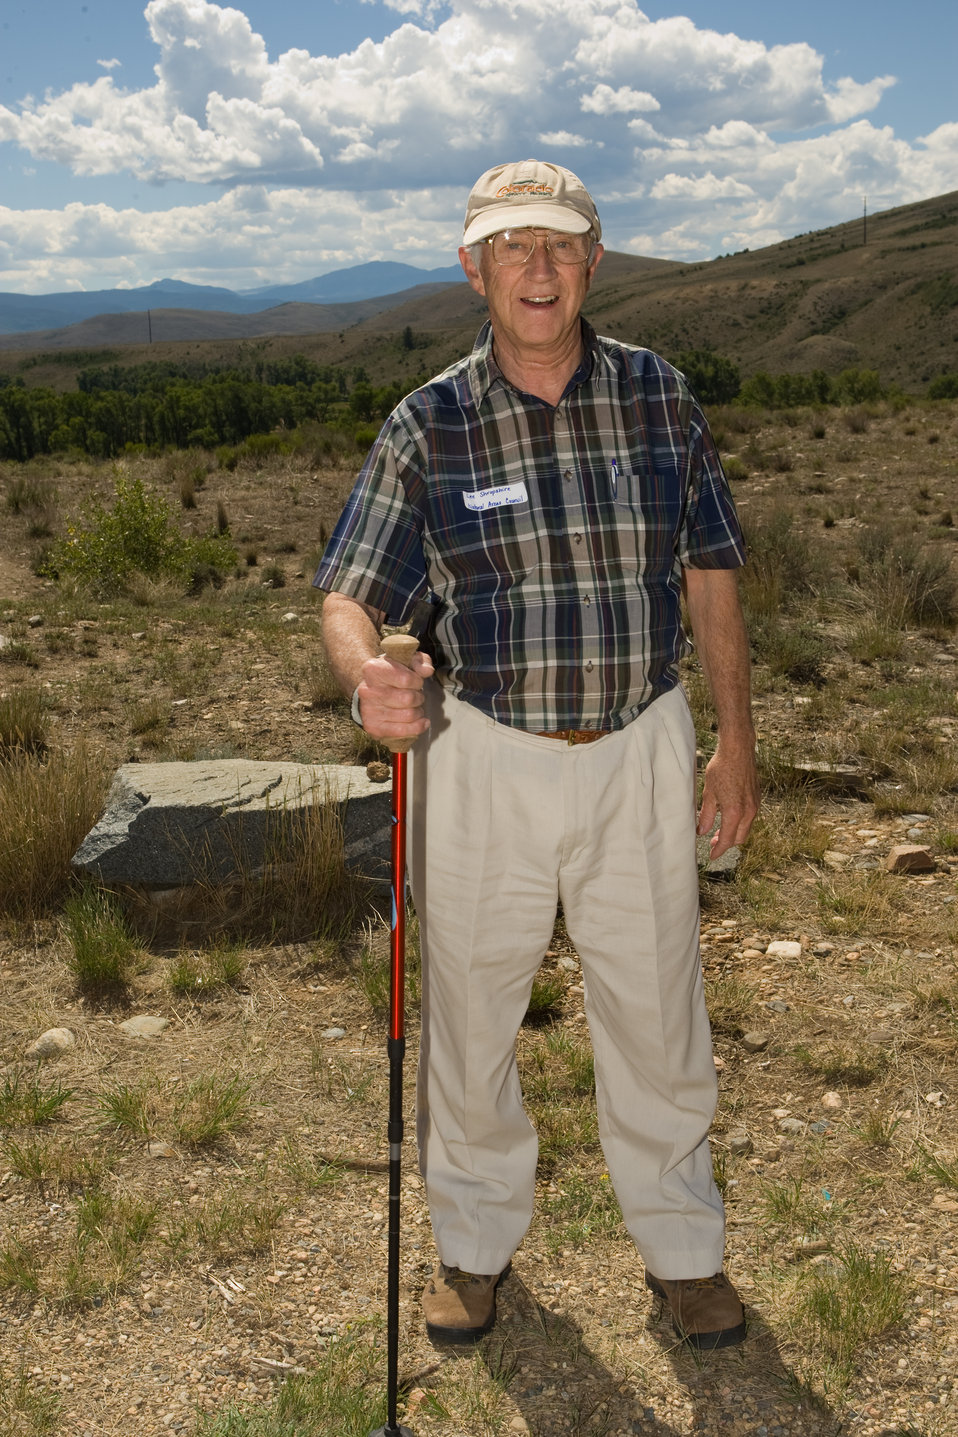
Colorado Rare Plant Conservation Initiative

The Colorado Rare Plant Conservation Initiative (RPCI) is a partnership of 23 statewide and regional agencies, private organizations, and academic institutions working to conserve 121 rare plants in Colorado. As part of these efforts the group developed the Colorado Rare Plant Conservation Strategy, developed Best Management Practices to reduce energy development impacts, addressed climate change, and developed focused strategies for the conservation of individual species at eight priority landscapes. The group has also worked to coordinate volunteer efforts for plant conservation across the state.